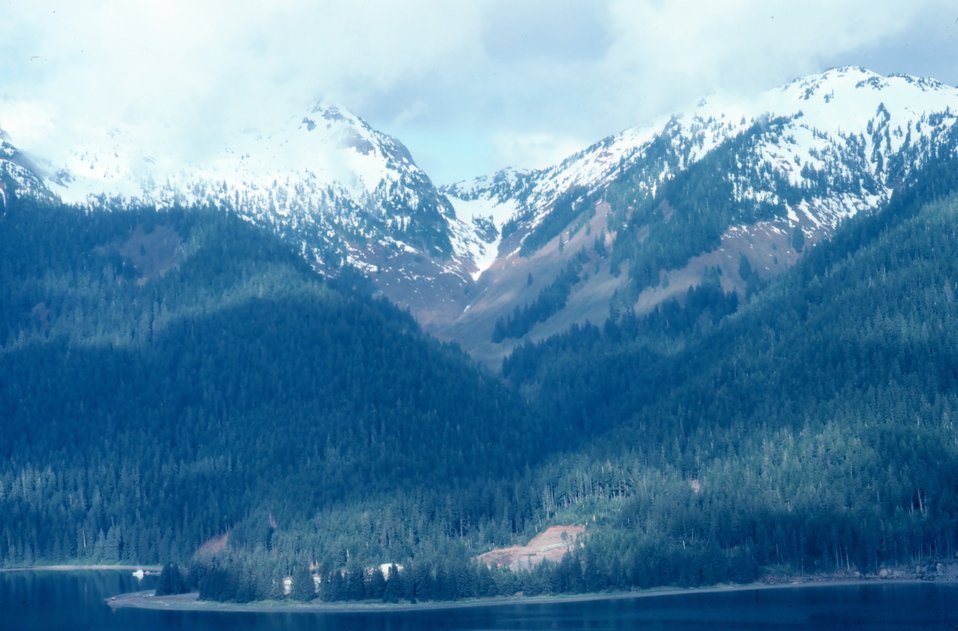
Shoreline and mountains of Chichagof Island.